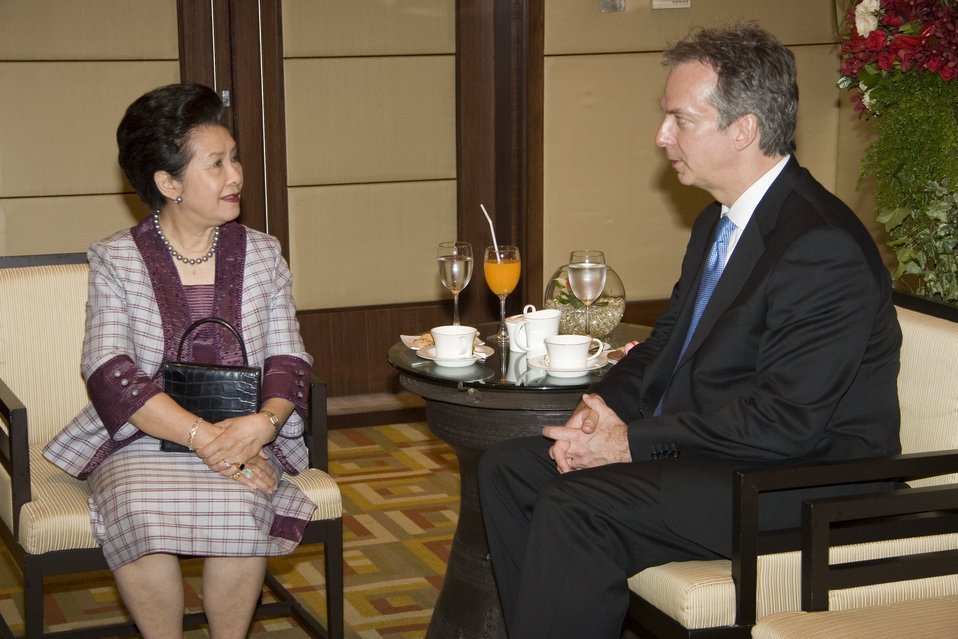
U.S. Ambassador to Thailand Meets With Thai Queen’s Lady-in-Waiting

U.S. Ambassador to Thailand Eric G. John meets with the Queen’s Lady-in-Waiting, Thanpuying Nravadi Chaixanien, at the Conrad Hotel in Bangkok, Thailand July 21, 2009.